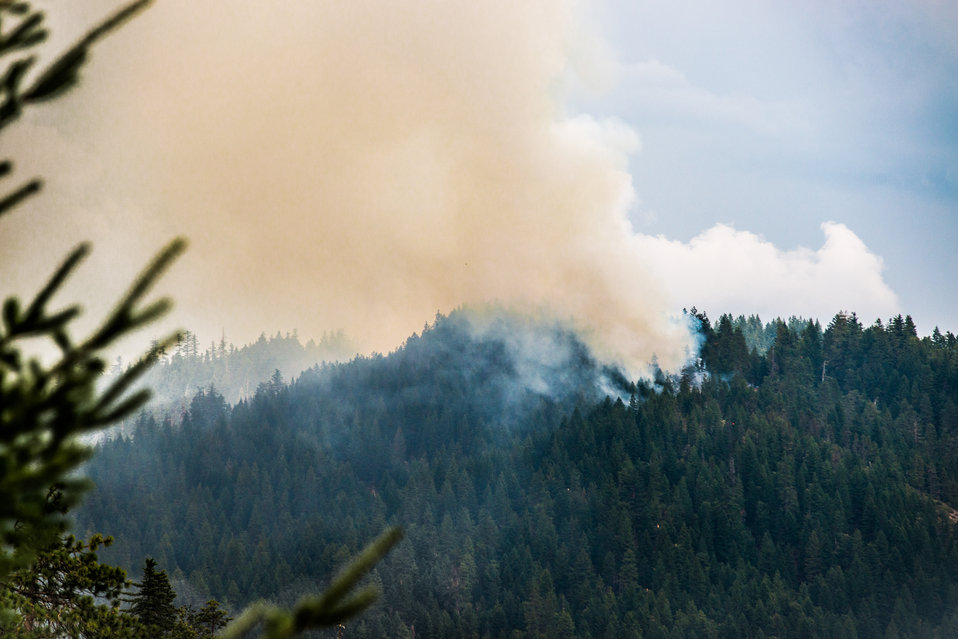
Big Windy Complex Wildlands Fire, 15 miles west of Interstate-5 and East Northeast of Galice, Oregon, with the Incident Command Post (ICP) in Merlin, OR on Friday, Aug 9, 2013.